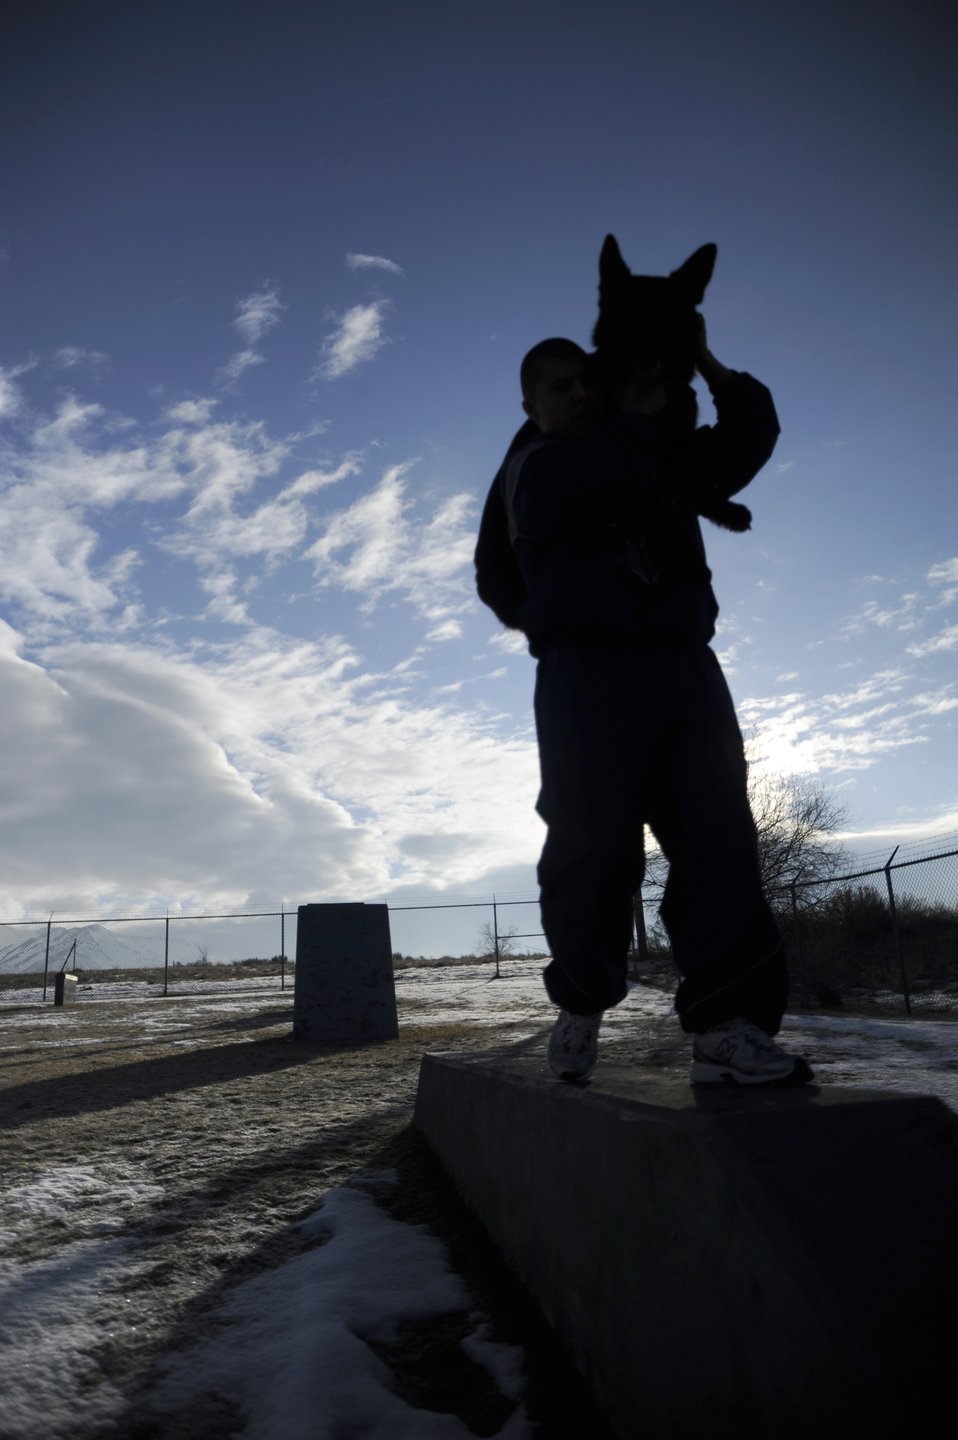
Building loyalty and trust

Staff Sgt. Erick Martinez, a military dog handler, takes Argo II through an obstacle course March 4, 2011, during an exercise at Hill Air Force Base, Utah. The exercise is designed to build loyalty, trust and teamwork between the K-9s and their handlers.